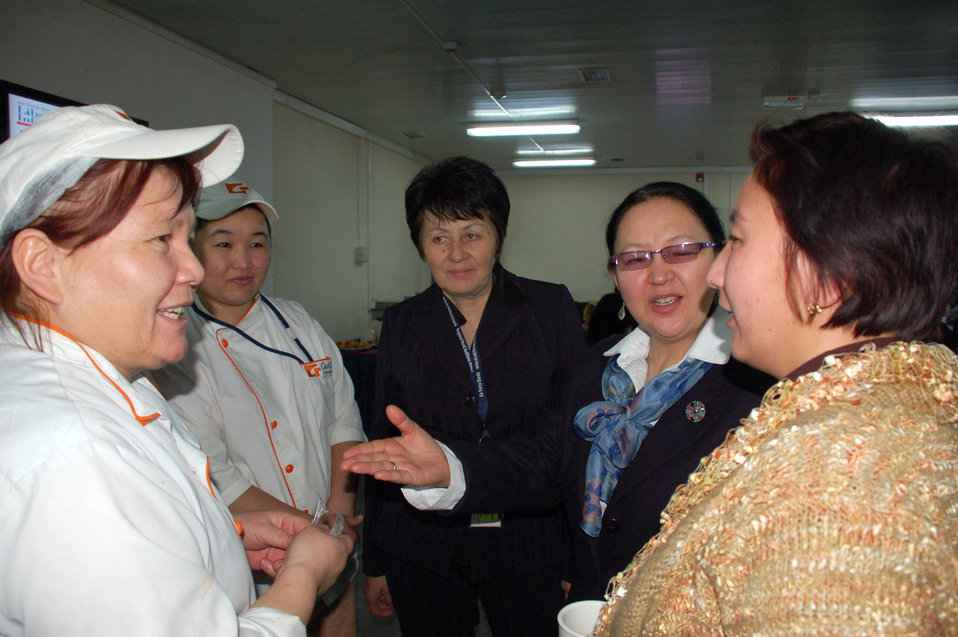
Manas Airmen host Kyrgyz Congress of Women

Members of the Kyrgyzstan Congress of Women talk with Kyrgyz employees at the dining facility during a Jan. 8 tour of Manas Air Base, Kyrgyzstan. The group, which consisted of female civic and business leaders from throughout Kyrgyzstan, visited the base to meet with Airmen and to learn more about the mission and the contributions of women who serve there.